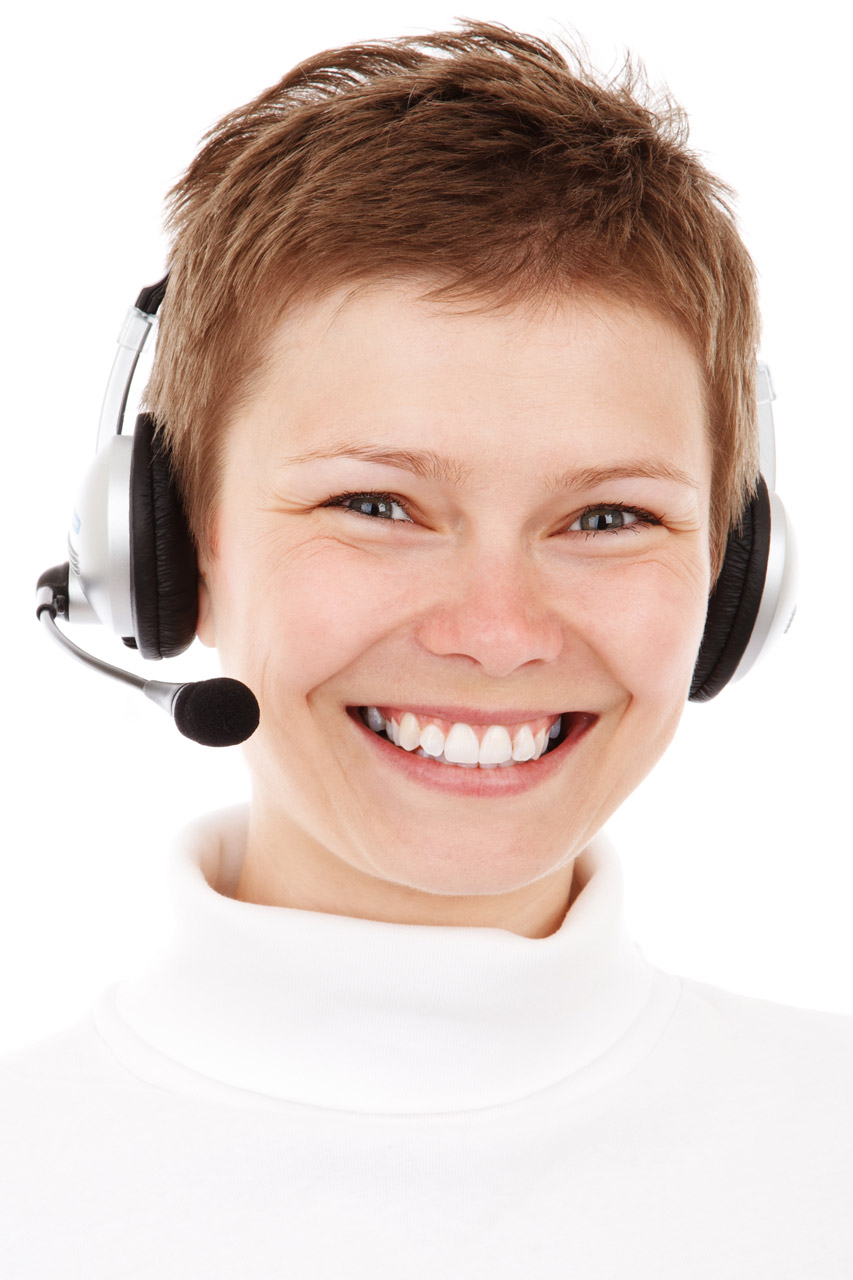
Smiling phone operator

Young woman with phone headset smiling isolated on white background - jana svojsova.